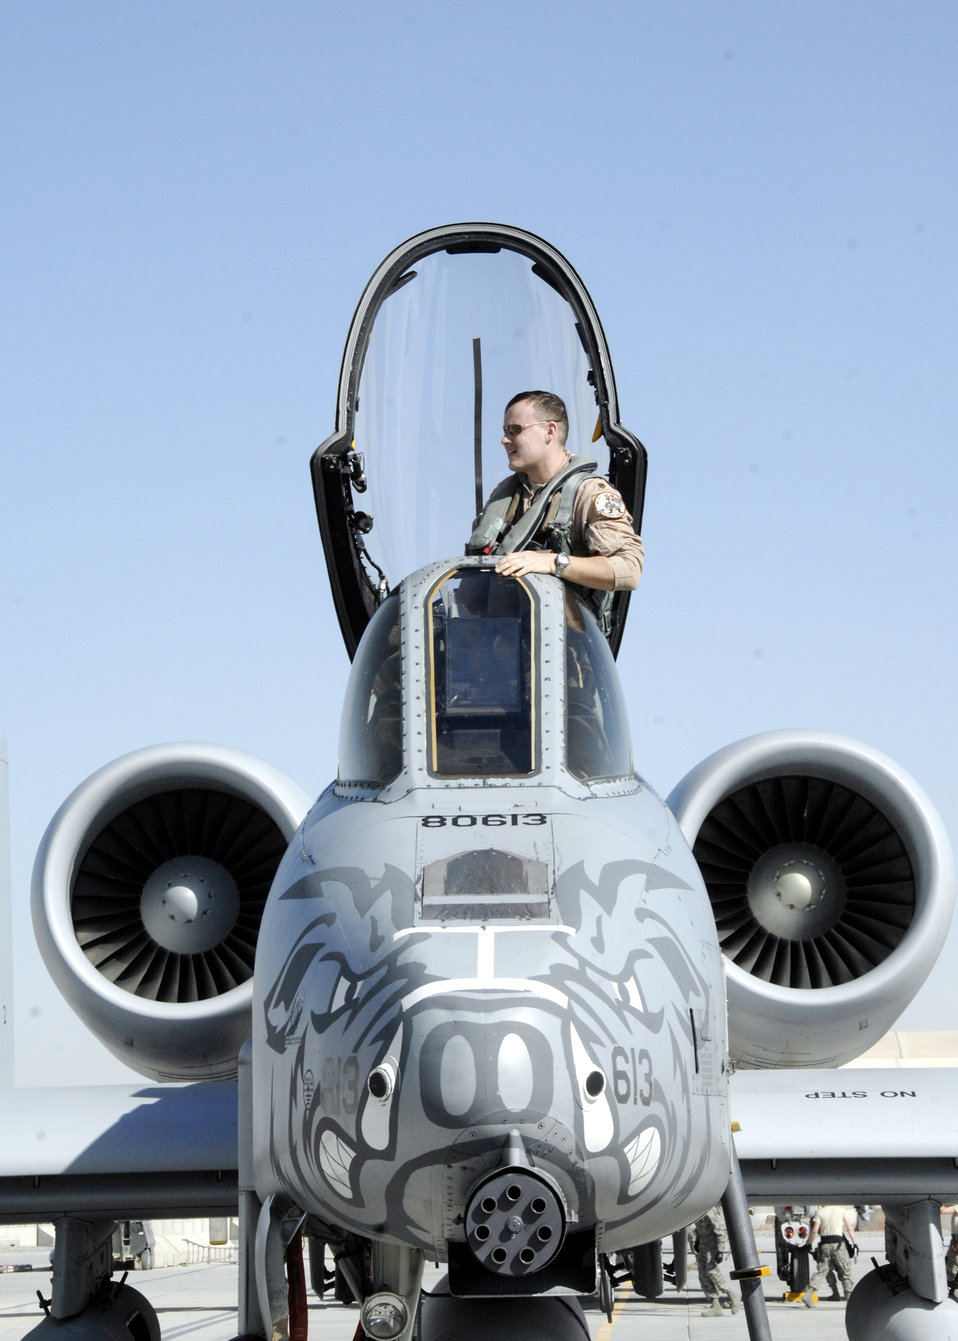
Getting mean

A pilot from the Maryland Air National Guard in Baltimore leaves the cockpit of his A-10 Thunderbolt II after arriving at Kandahar Airfield, Afghanistan, Jan. 13, 2010. The transition from the 354th Expeditionary Fighter Squadron to the 104th EFS is near completion after the final six A-10s taxied into their chalks.